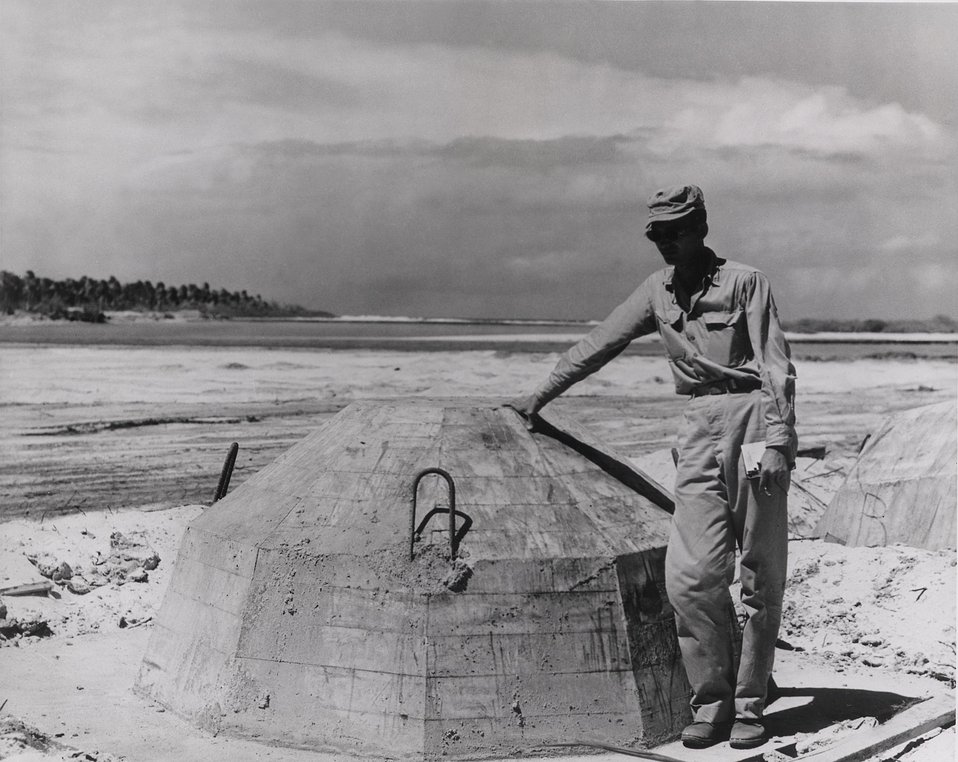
Cement instruments testing cubes are built near the detention point of the atomic bomb.